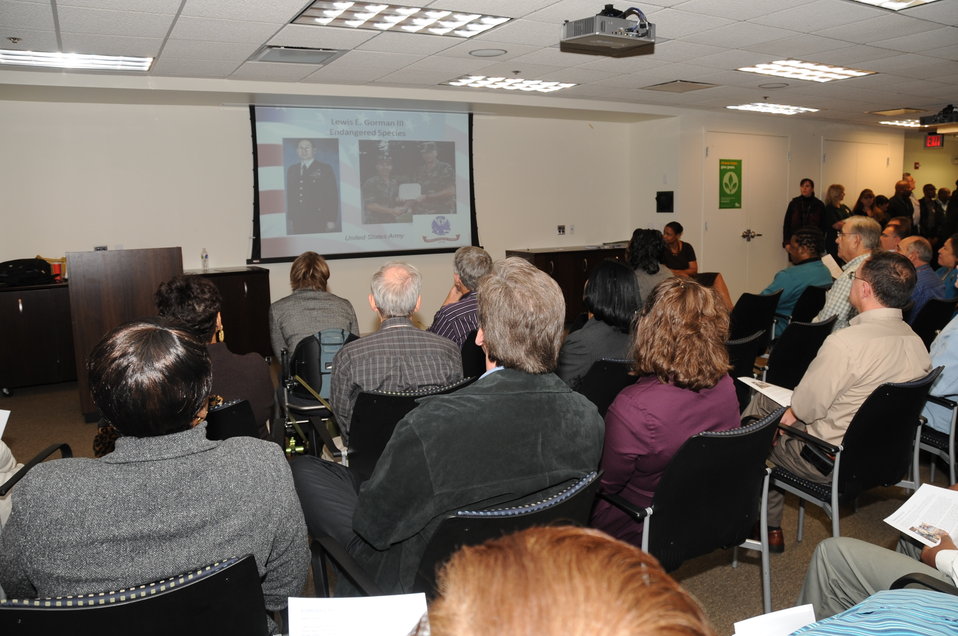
Honoring and Celebrating our Veterans

11.07.2012 Employees gathered in the Arlington Office to honor FWS Veterans